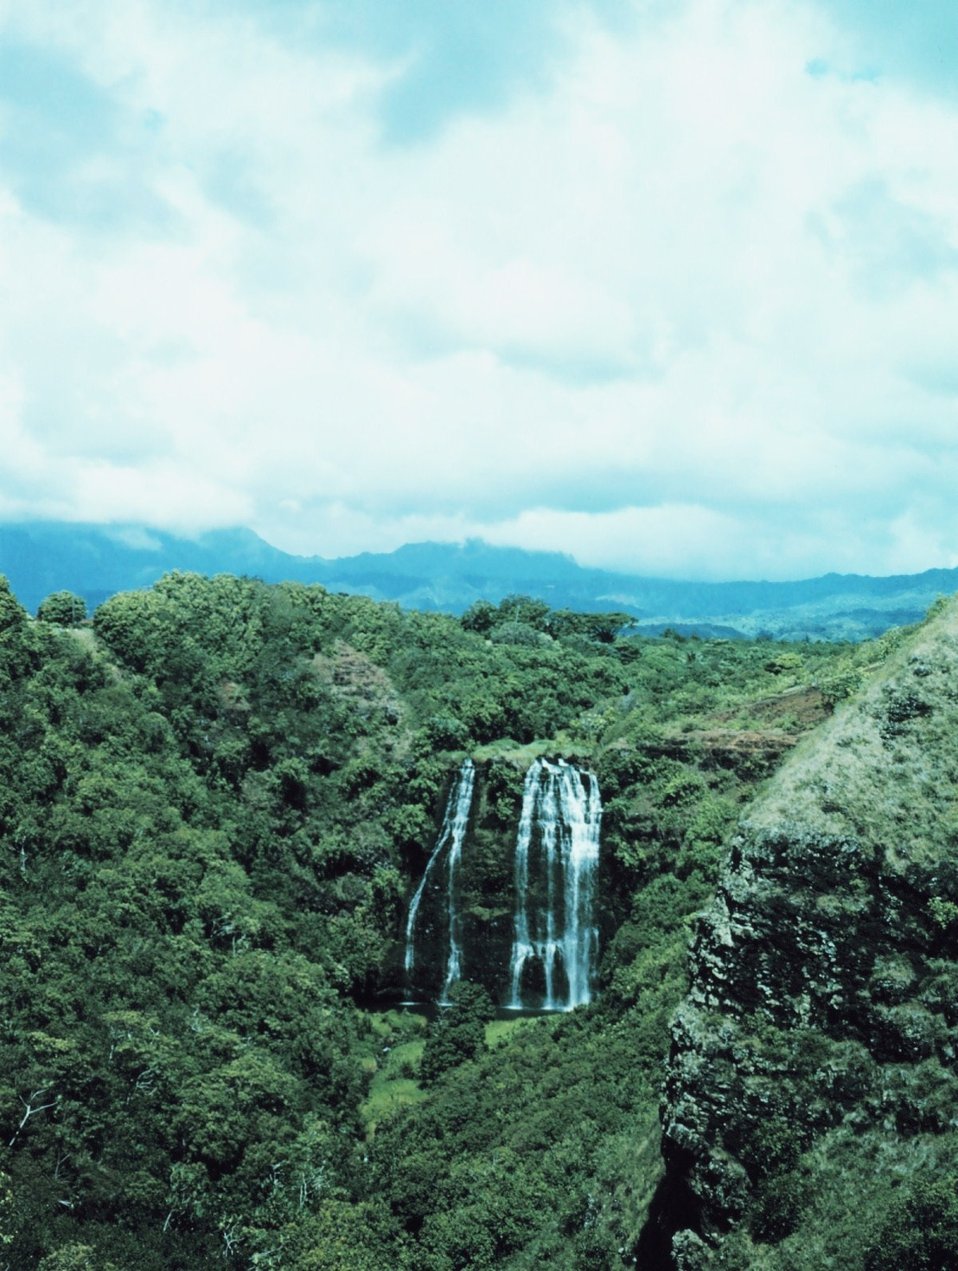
Opaikua Falls at Wailua